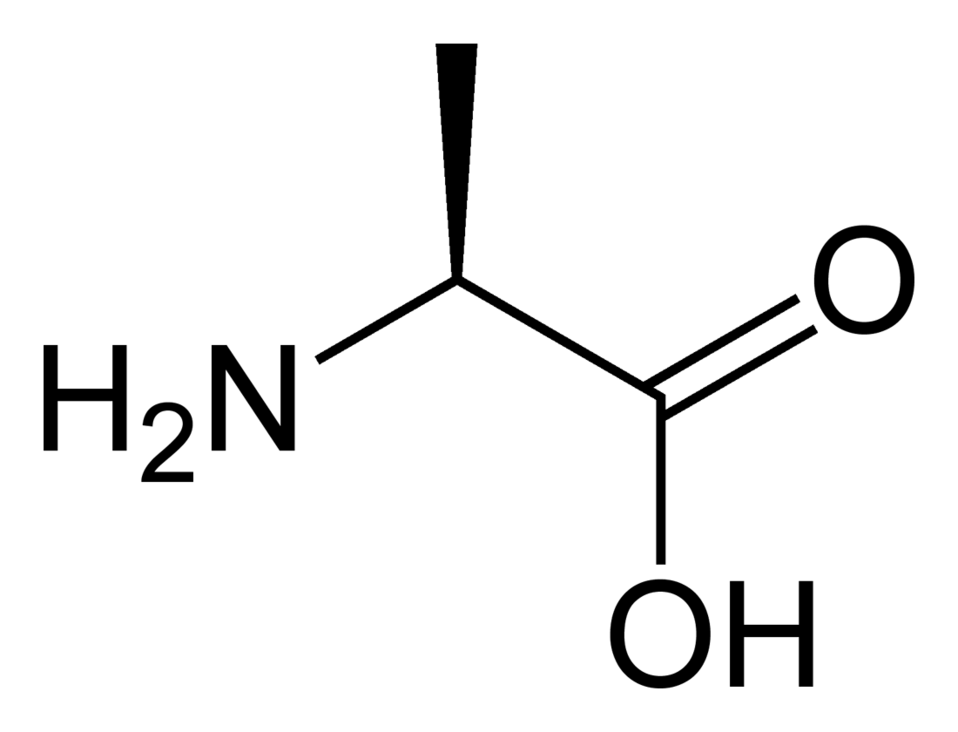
L-alanine-2D-skeletal